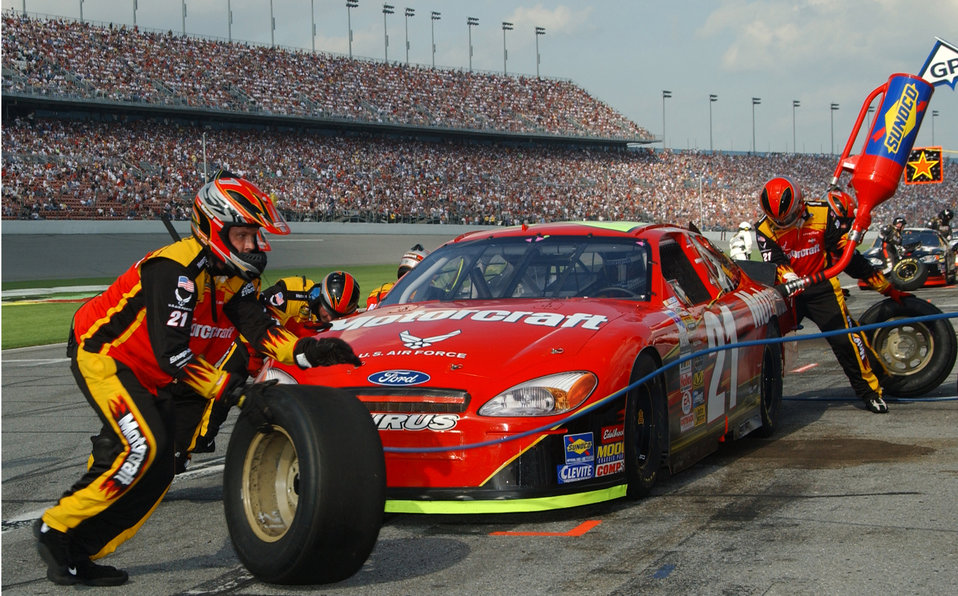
Quick change artist

DAYTONA MOTOR SPEEDWAY, Fla. -- Andy Silver, a pit crewman for the Air Force-sponsored Wood Brothers Racing No. 21 Ford Taurus, pushes the right front tire to the pit wall after a four-tire change.